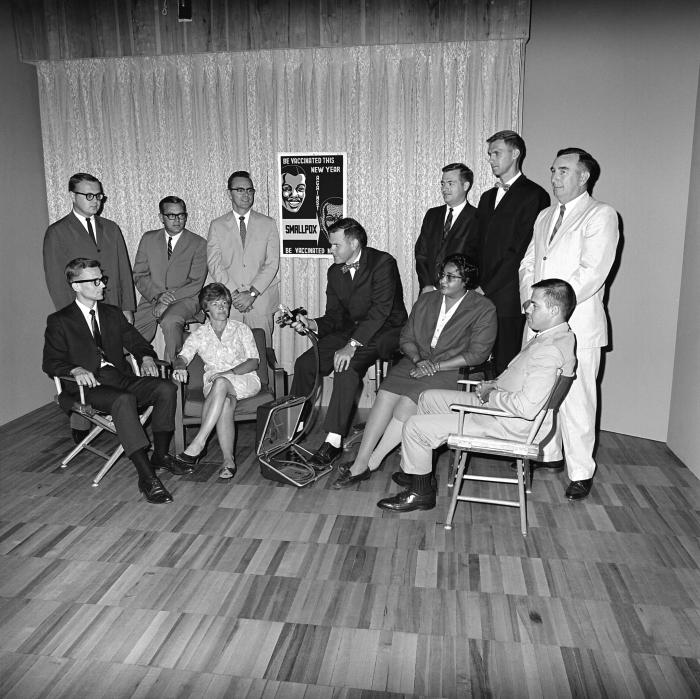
This 1966 image depicted those CDC personnel who were stationed in Nigeria for the Smallpox Eradication/Measles Control Project in that nation. Dr. Stanley O. Foster, Chief, was seated in the center, and seated (L-R) were Dr. David M. Thompson, Ms. C.J. Jones, Dr. Margaret Grigsby, and Mr. Paul Lichfield. Standing (L-R) were Mr. Gerald P. Flanders, Mr. James O. Lewis, Dr. Deane L. Hutchins, Mr. Warren R. Jones, Dr. William Goege, and Mr. John W. Greenley.